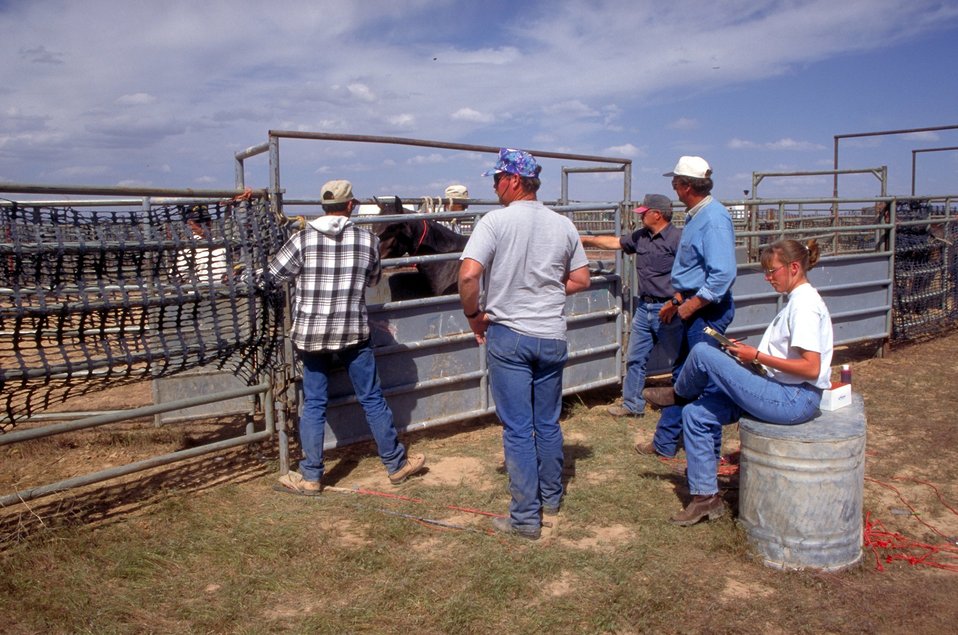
EIA testing near Vernal, Utah.